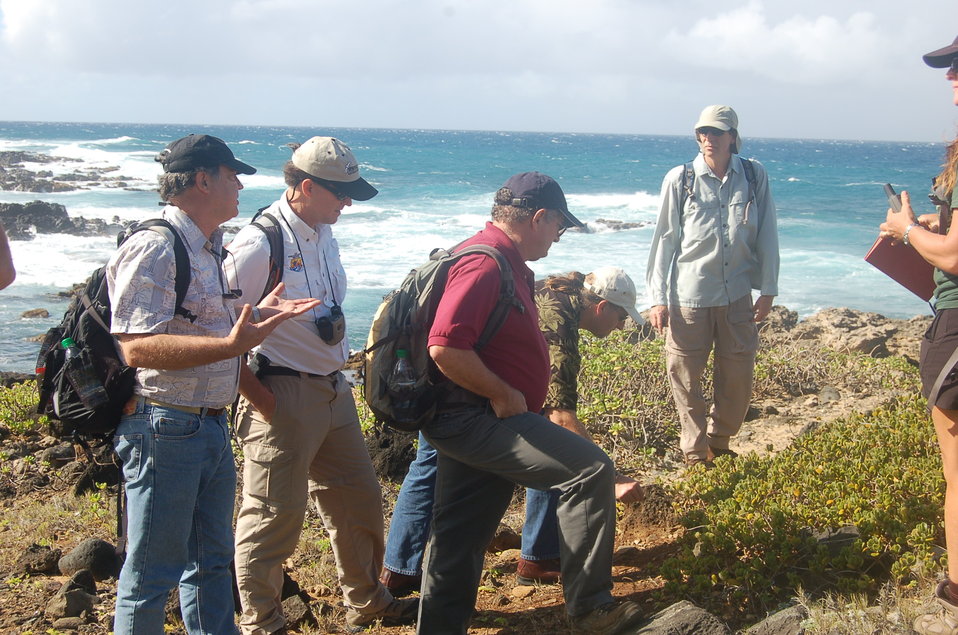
Dan Ashe tours Ka'ena Point State Park in Hawaii

USFWS Director Dan Ashe tours Ka'ena Point State Park with fellow Service employees in Hawaii.